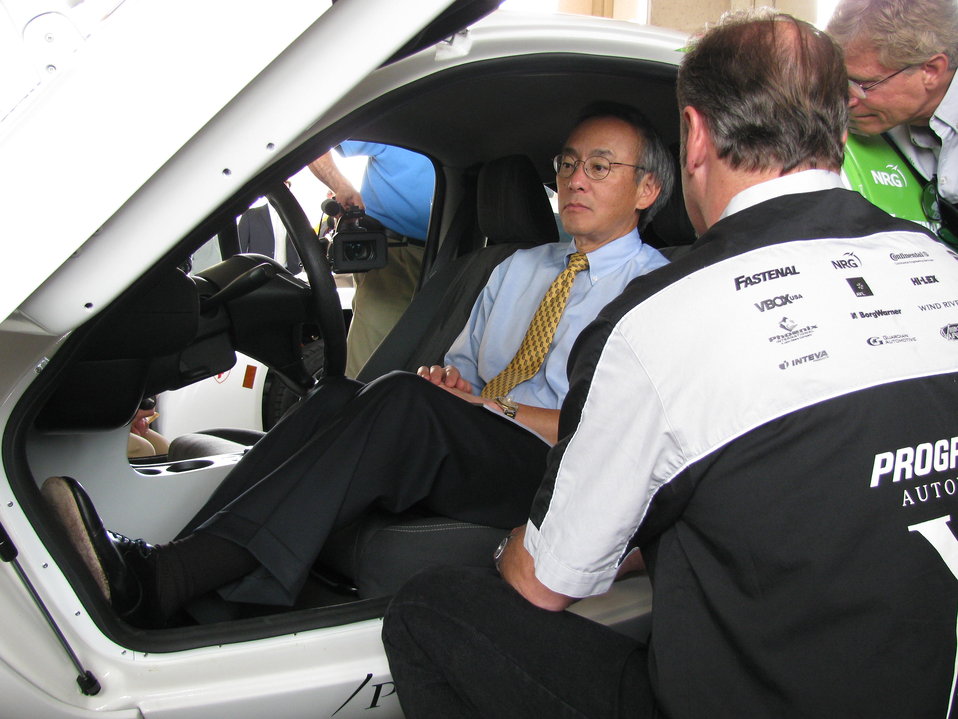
X Prize 041